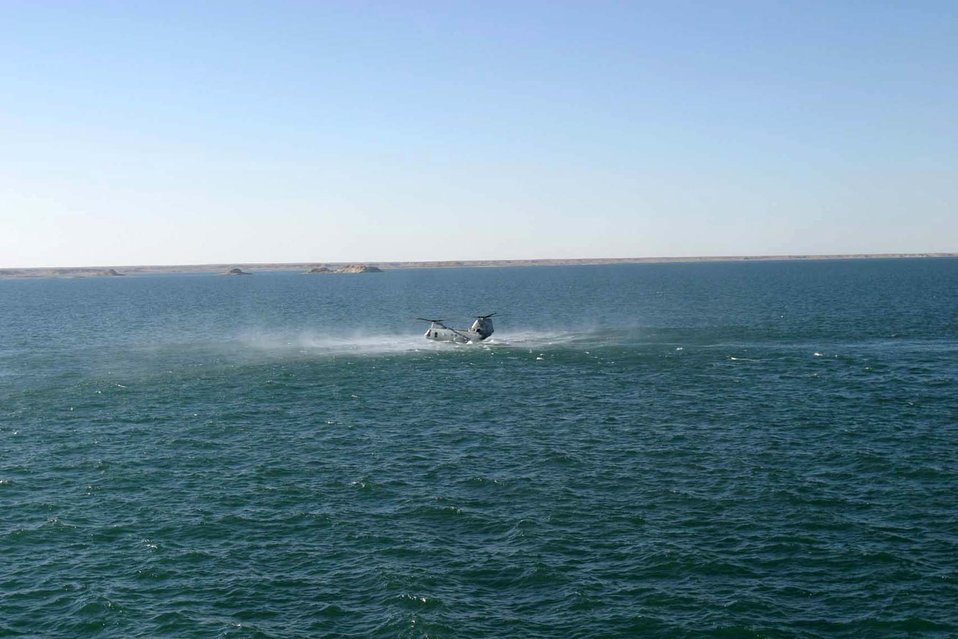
Chilling rescue: Agent saves downed helicopter crew

A Marine C-46 Sea Knight crash-lands in the rough 50 degree waters Dec. 3, 2006, in Lake Quadisiya in Iraq. Air Force Office of Special Investigations Special Agent Jim Collins, with the help of others, rescued 10 of the passengers.